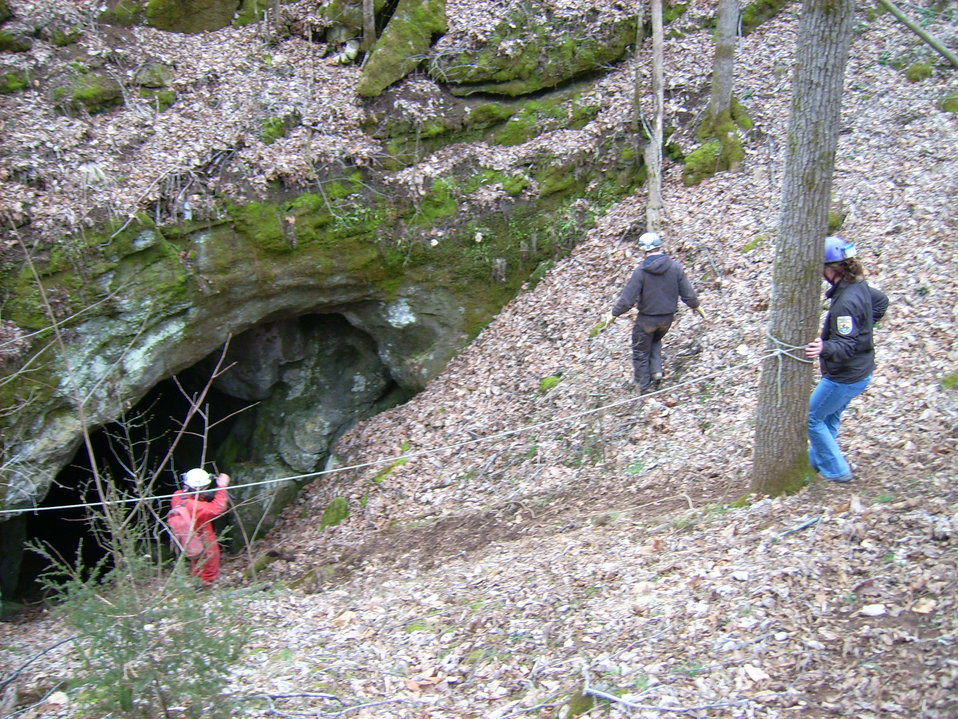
Entrance to Limekiln Cave

Group of biologists at the entrance to Limekiln Cave to survey for Madison Cave Isopod.